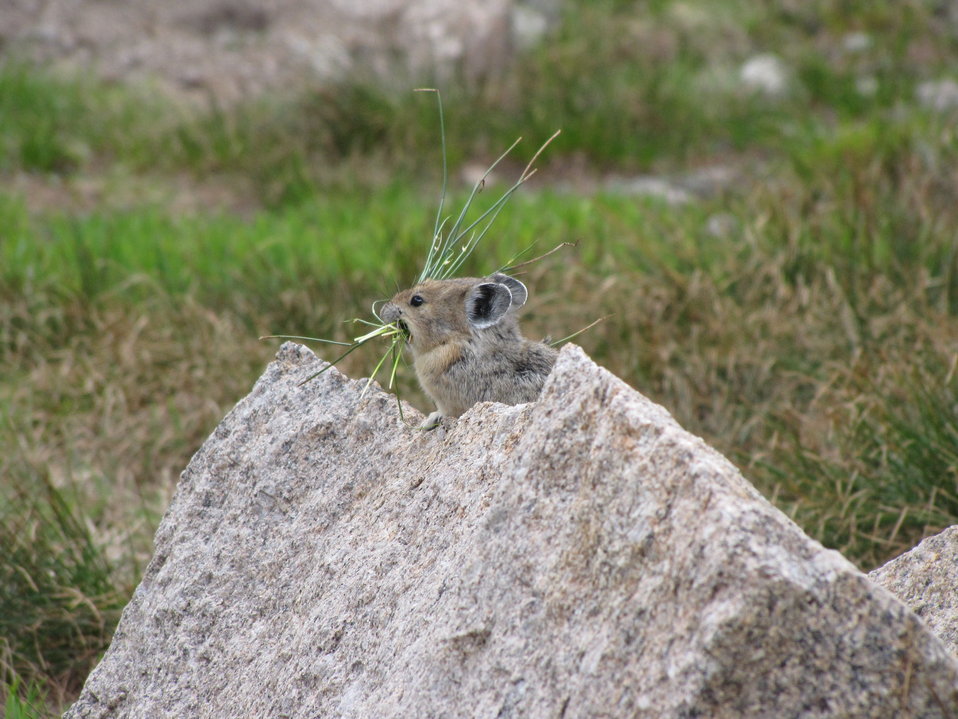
American Pika